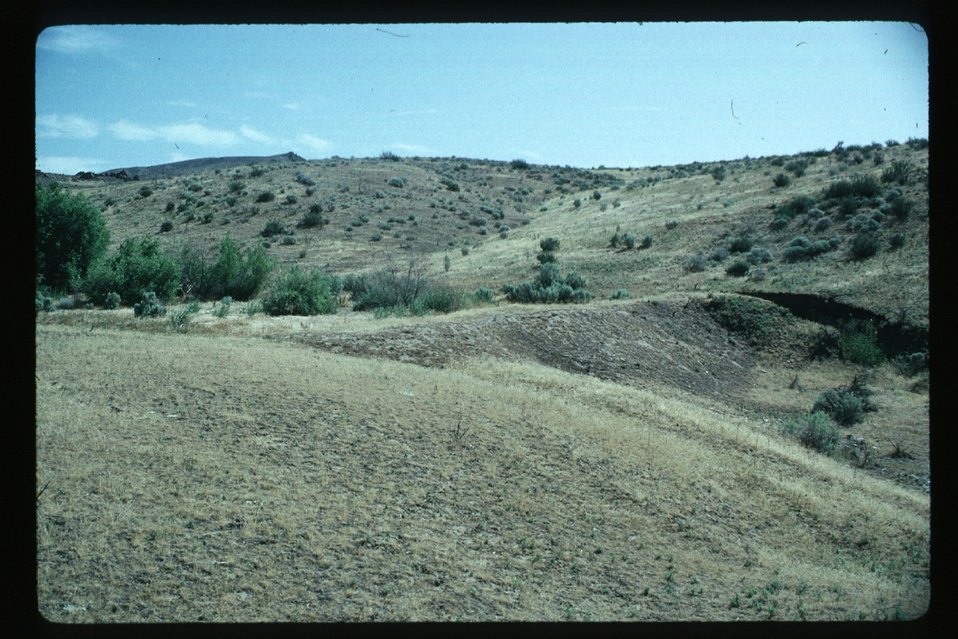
Small damn Riparian area LSRD Lower Snake River District